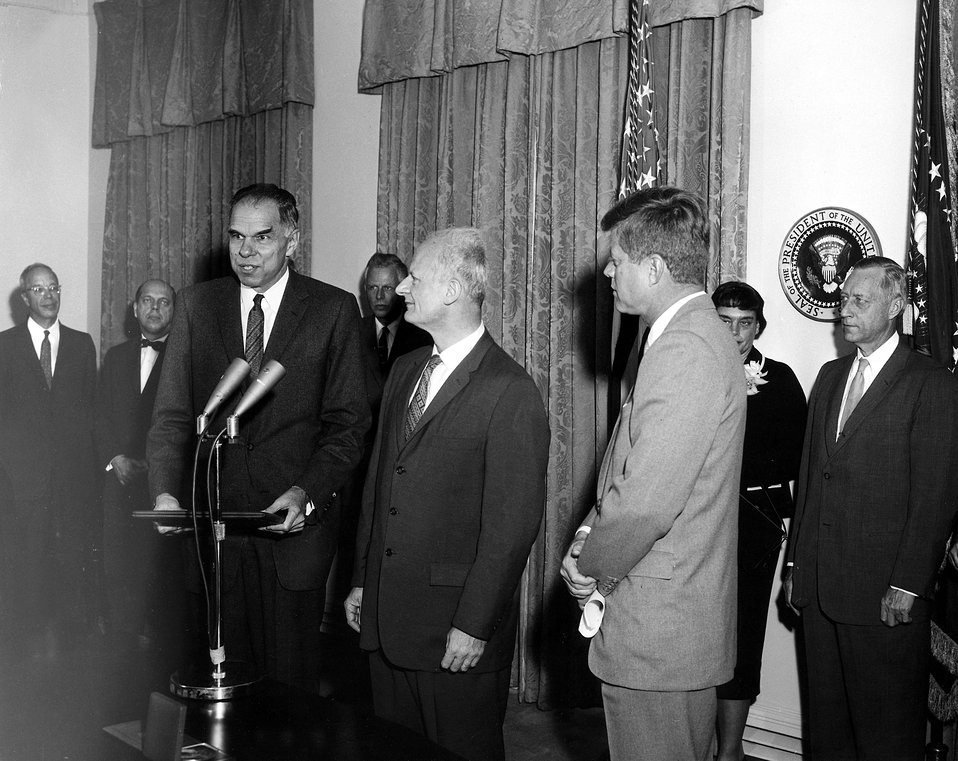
Hans Bethe receiving Fermi Award.